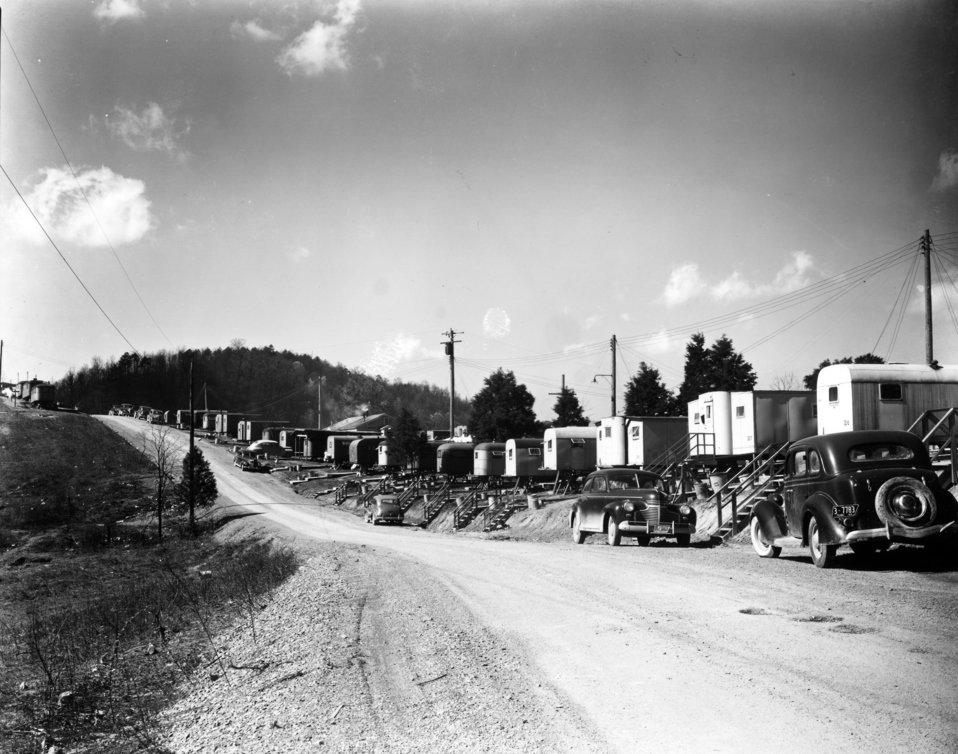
Housing at Oak Ridge